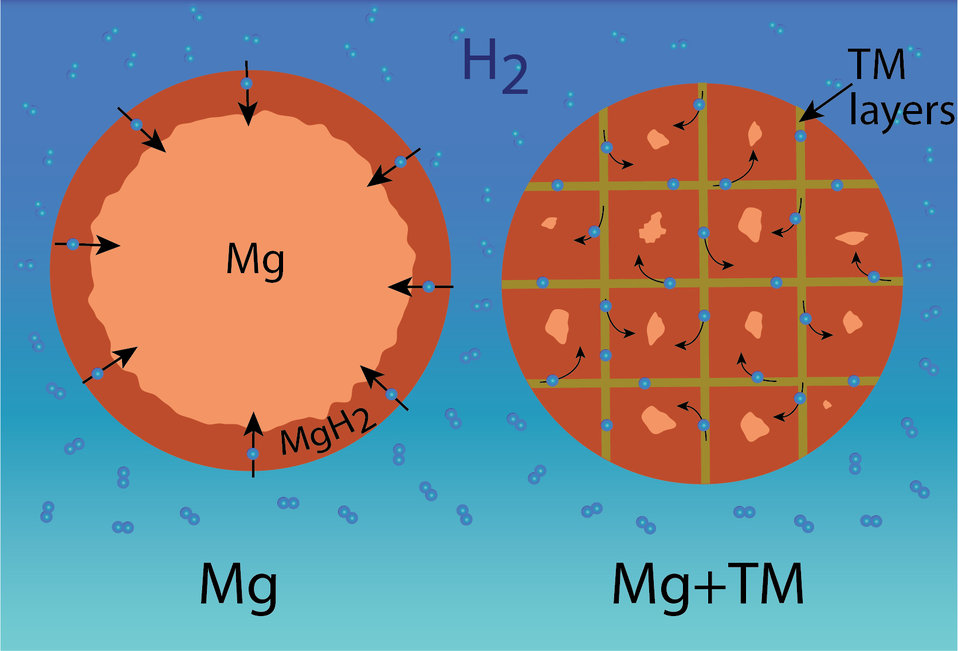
Magnesium

Particles of pure magnesium (left) can only collect a limited amount of hydrogen on their outer surfaces, and the process is slow. But when the magnesium is doped with iron (right), far more hydrogen is delivered through the iron layers, which also results in much faster charging.